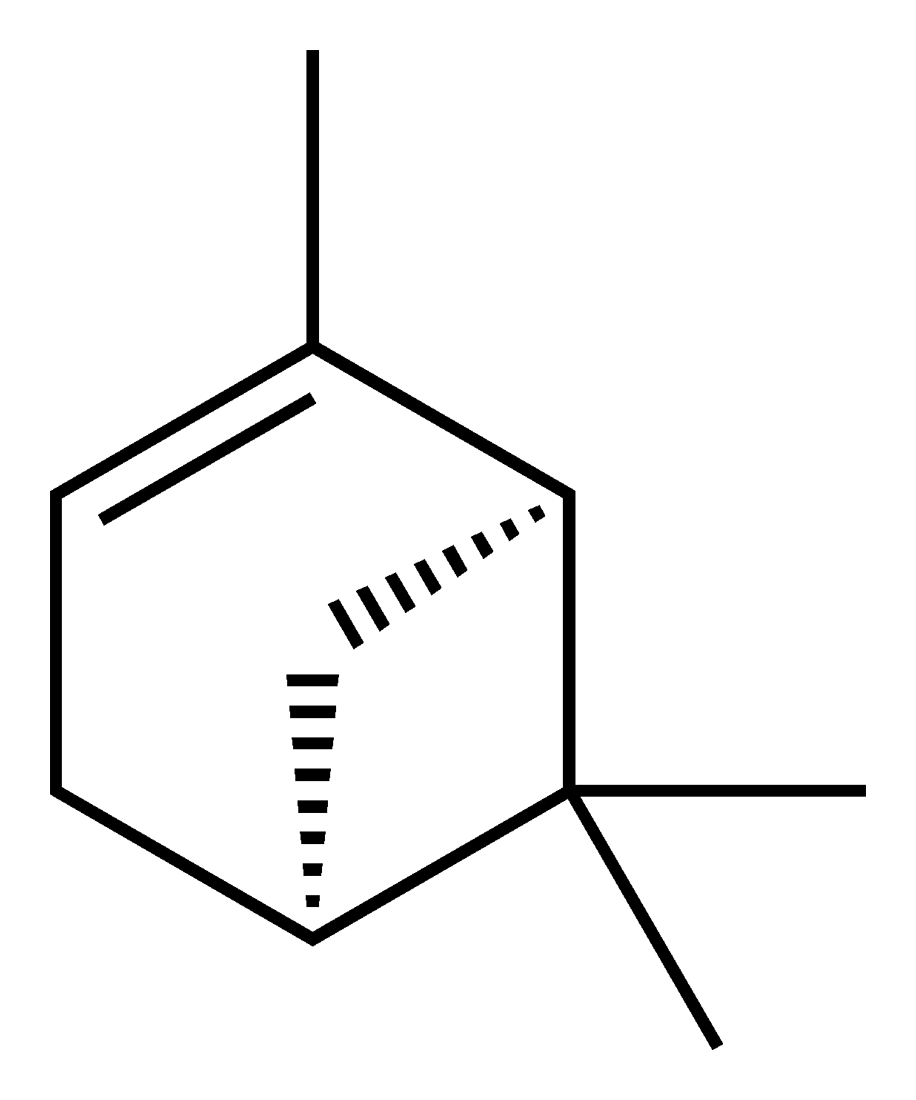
Skeletal formula of the (1S)-(−)-α-pinene molecule, C10H16. Skeletal formula from A. D. Bond and J. E. Davies (November 2001). '(1S)-(−)-α-Pinene'. Acta Cryst. 'E57' (11): o1039-o1040. DOI:10.1107/S1600536801016415. Image generated in Accelrys DS Visualizer.